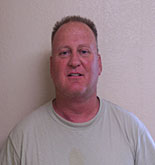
Gary Luke Munsch is a part of the Wounded Warrior Project in the Southwest Region, and a participant in Operation Warfighter. Master Sergeant Munsch will be medically retired after serving more than 38 years of both active and reserve duty. Currently Munsch is working for the Fish and Wildlife Service at Inks Dam National Fish Hatchery assisting with a wide variety of tasks at the hatchery.